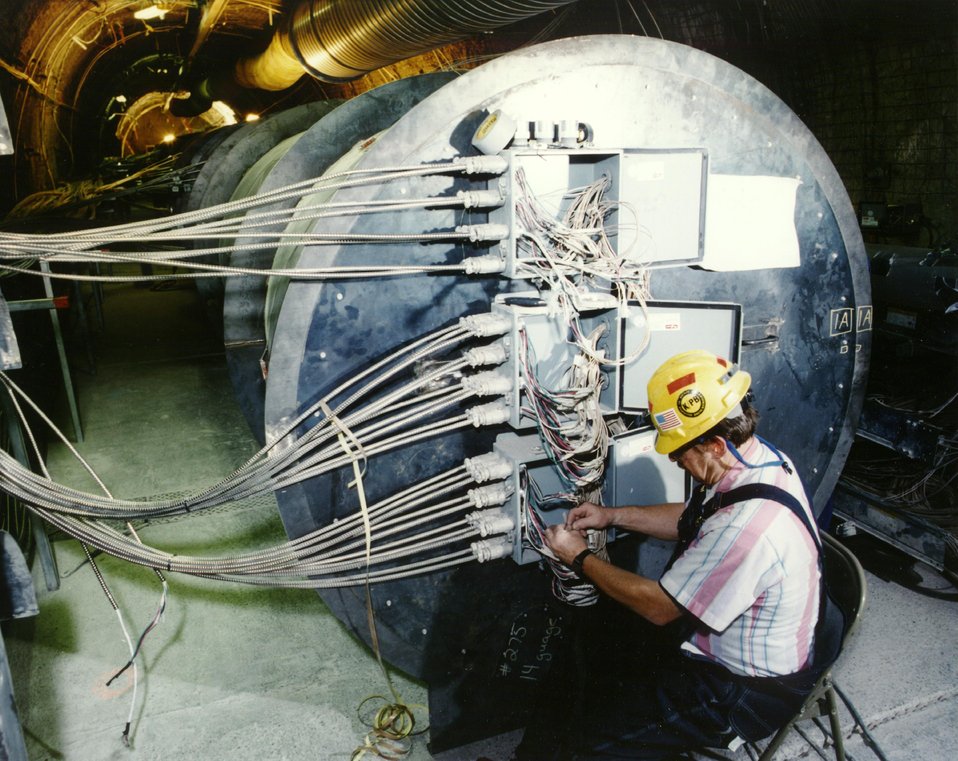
ELECTRICIAN WIRING A CANISTER IN ALCOVE 5.

YUCCA MOUNTAIN IS A SITE DESIGNATED BY THE US CONGRESS TO STUDY ITS SUITABILITY AS THE NATION'S FIRST REPOSITORY FOR SPENT NUCLEAR FUEL AND HIGH LEVEL RADIOACTIVE WASTE. IT IS LOCATED IN AN ISOLATED AREA, ON THE SOUTHWEST BOUNDARY OF THE NEVADA TEST SITE, 100 MILES NORTHWEST OF LAS VEGAS.